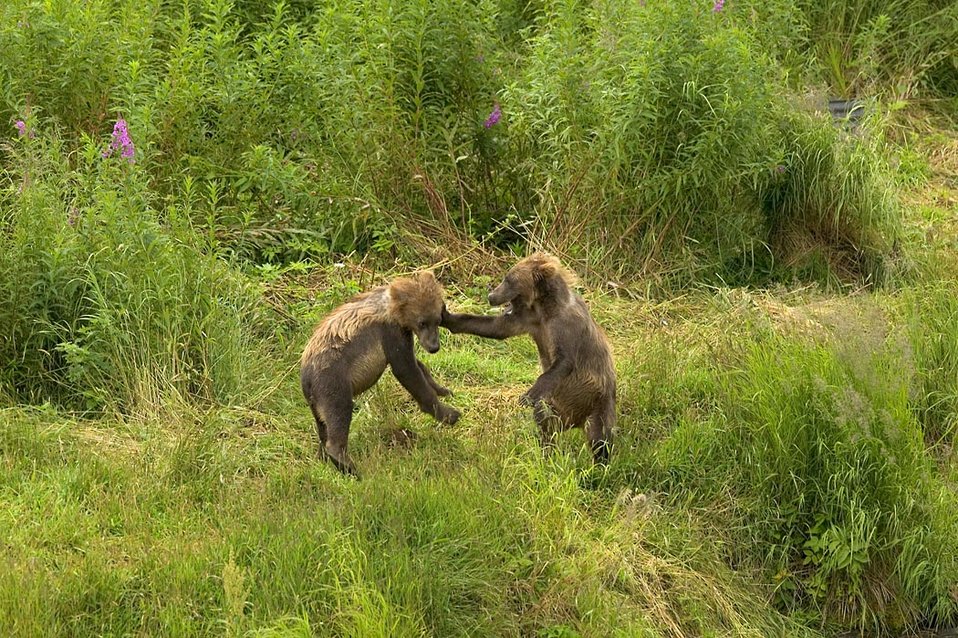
Brown bear cubs playing

Two grizzly bear cubs playing on their hind legs in shrub area.